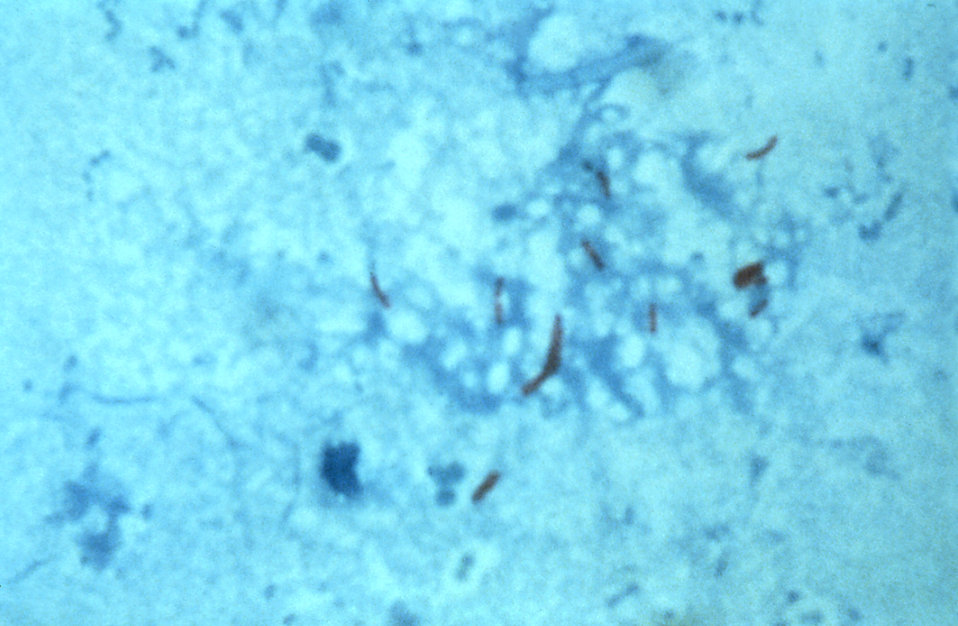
This photomicrograph reveals Mycobacterium tuberculosis bacteria using acid-fast Ziehl-Neelsen stain; Magnified 1000X.